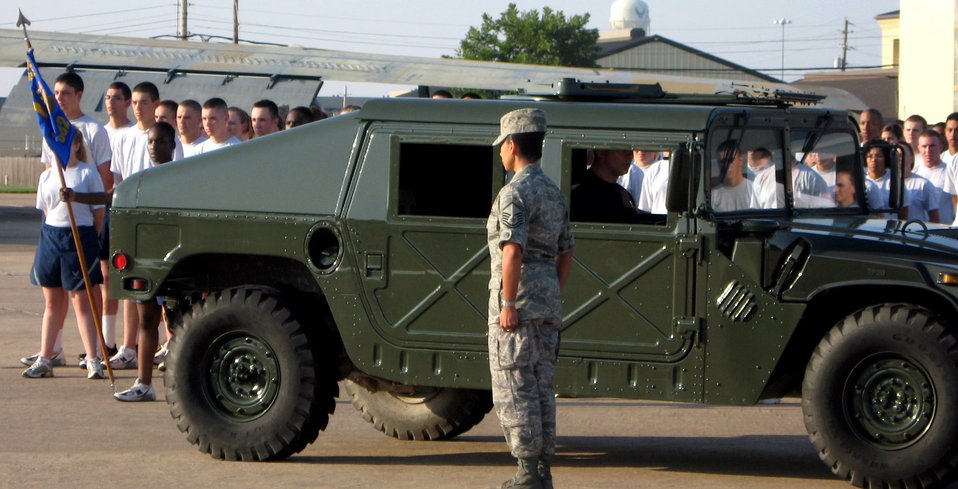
Airmen featured on Food Network

Master Sgt. Jennifer Isom welcomes Chef Robert Irvine, of the Food Network's